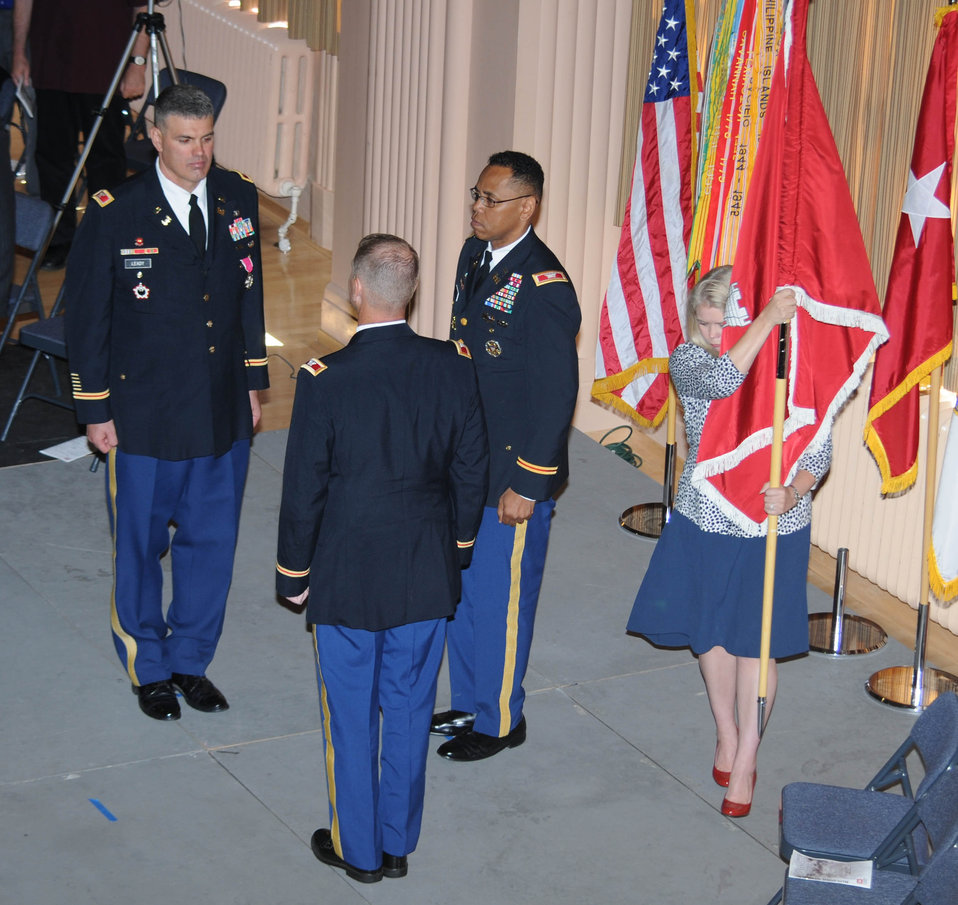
Passing of the engineer colors

Colonel David Turner, commander of the U. S. Army Corps of Engineers South Pacific Division, leads the official party out of the Sacramento District’s change of command ceremony July 10, 2013 at the Masonic Temple in Sacramento, Calif. Colonel William J. Leady relinquished command of the district to Col. Michael Farrell, the district’s 31st commander.